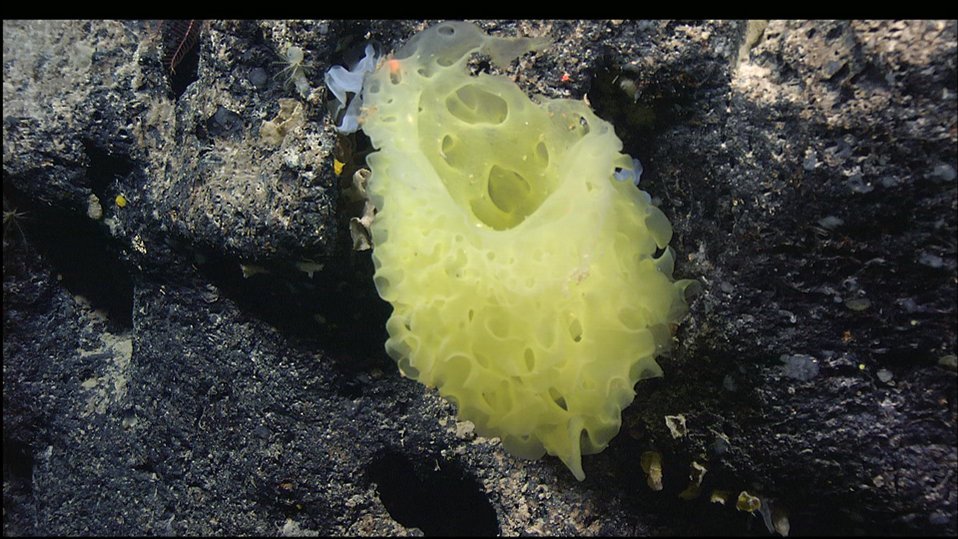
A large yellow sponge (Farria sp.) from Lyman Seamount. Sponges, like corals, attract other fauna, such as crinoids, brittle stars, shrimp, and amphipods.